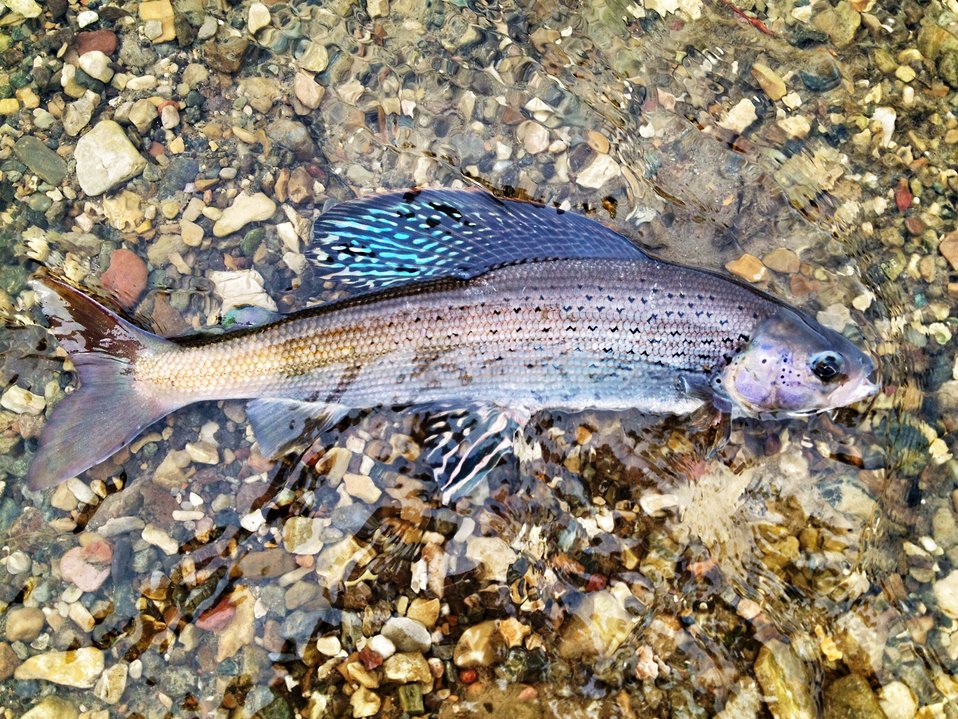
Montana Arctic Grayling

Arctic Grayling in Montana are a State Species of Special Concern. This male, collected in our fish trap, provided us with data that will help us better understand this unique species.
Our trap, located on Red Rock Creek, Red Rock Lakes National Wildlife Refuge, Montana, is one of the sampling and monitoring methods utilized by Montana Fish and Wildlife Conservation Office personnel to assess fish population trends.